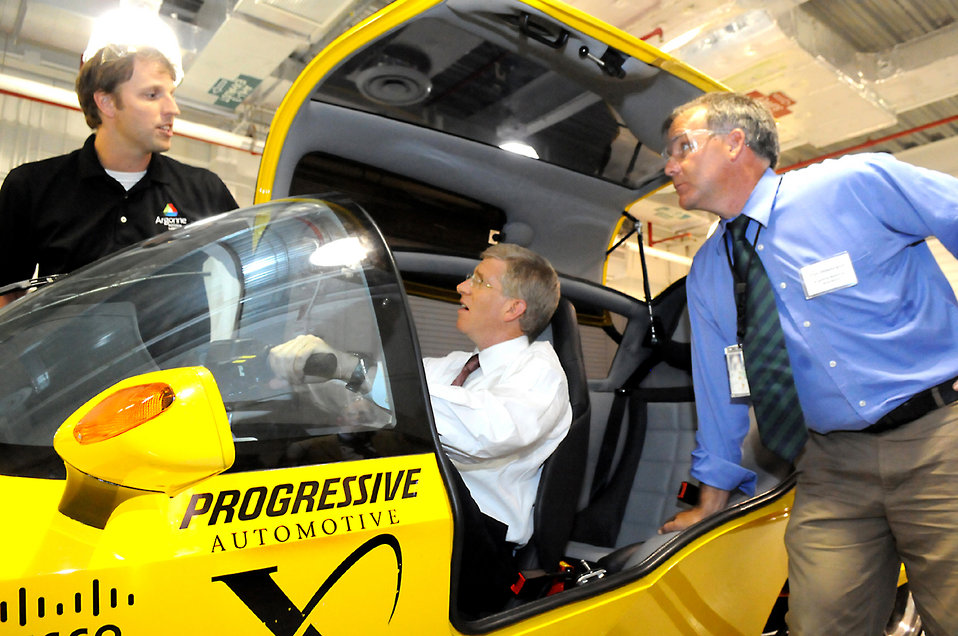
Deputy Secretary Poneman tries out a finalist for the Progressive Automotive X prize

Argonne engineer Mike Duoba and Don Hillebrand flank the Deputy Secretary of Energy Daniel Poneman as he examines a finalist for the Progressive Automotive X Prize.